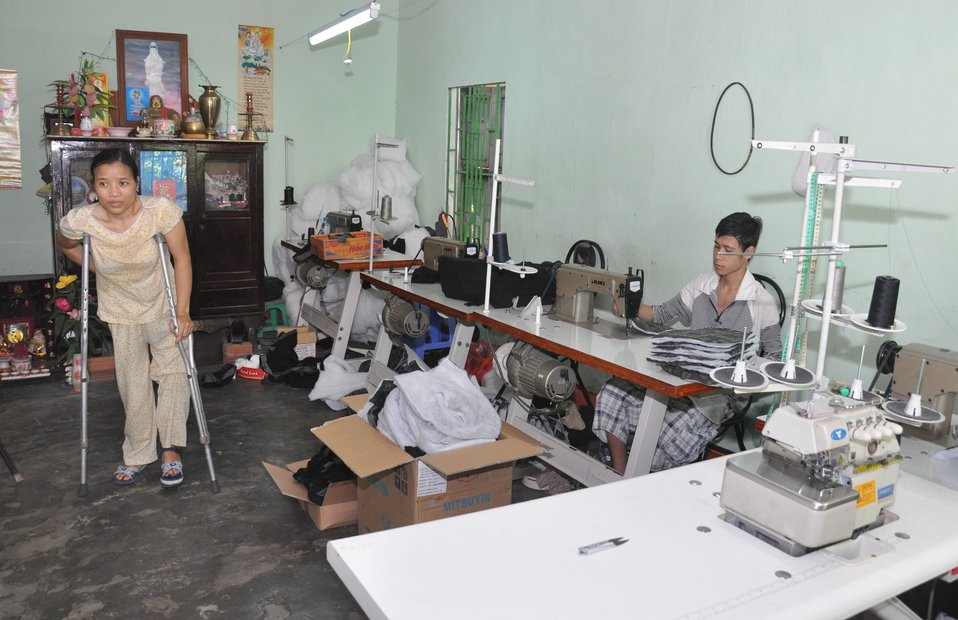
USAID supports training on livelihood skills for persons with disabilities in Danang.

Danang, June 10, 2013.